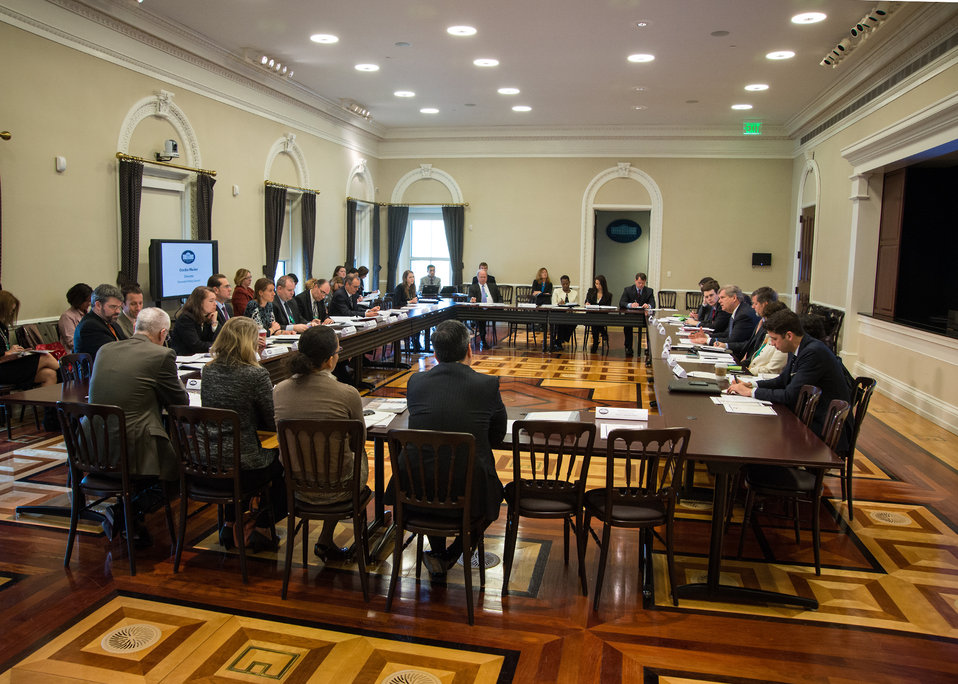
Agriculture Secretary Tom Vilsack and administration officials discuss the Farm Bill, Immigration Reform and White House Rural Council Investments and Policy actions at the Eisenhower Executive Office Building in Washington, D.C. on Thursday, Nov. 21, 2013.